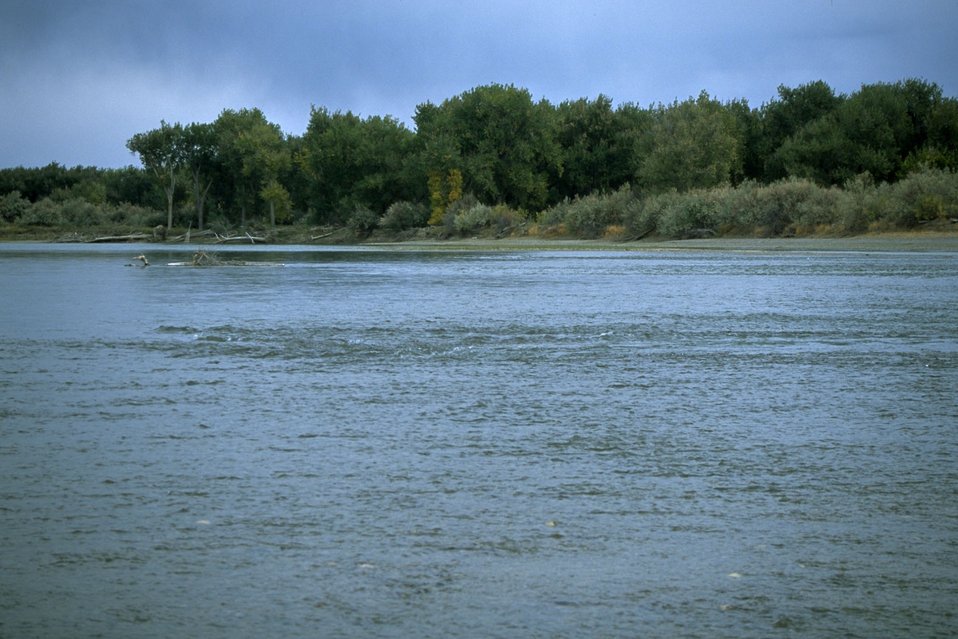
Yellowstone River near Howrey Island Recreation Area